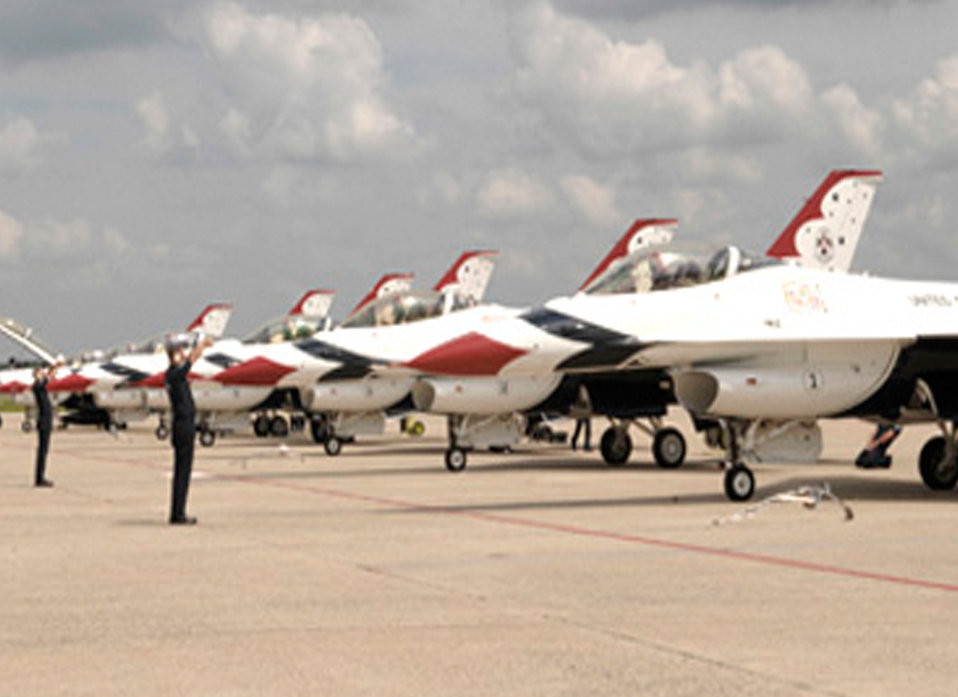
Thunderbirds to fly with alternative fuel

Maintainers signal to returning Thunderbirds pilots May 16, 2011, during a practice run for an upcoming aerial show during the Joint Services Open House May 20 to 21, 2011, at Andrews Air Force Base, Md. During the show, the Thunderbirds plan to fly with Camelina-based hydrotreated renewable jet fuel.